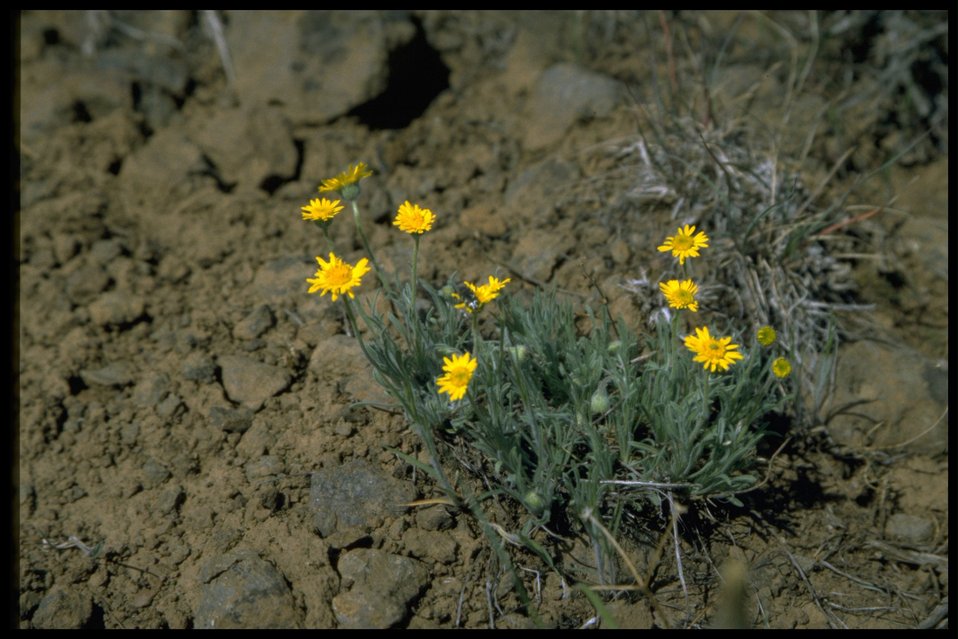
Farshot of Line-leaf Fleabane wildflowers.